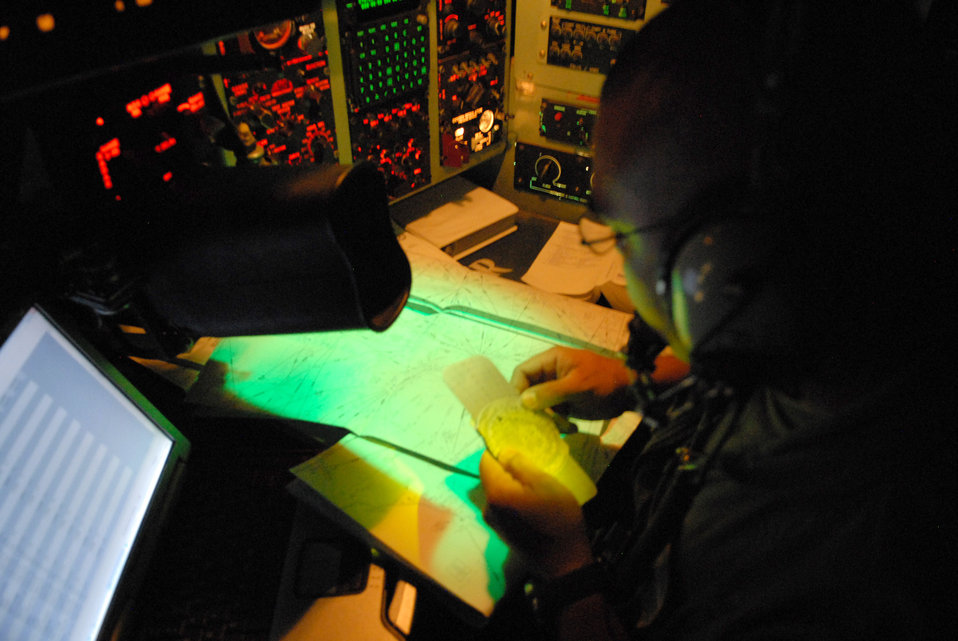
Airman evacuate patients from Beaumont

Capt. Ryan David, a C-130 Hercules navigator from Little Rock Air Force Base, Ark., calculates the flying time from Beaumont, Texas, to Lackland Air Force Base in San Antonio. Medical patients were being transported from Beaumont to Lackland AFB in C-130 Hercules aircraft by aircrews from Little Rock AFB and medical Airmen from the 908th Aeromedical Evacuation Squadron at Scott AFB, Ill., in preparation for Hurricane Ike's landfall in southern Texas.